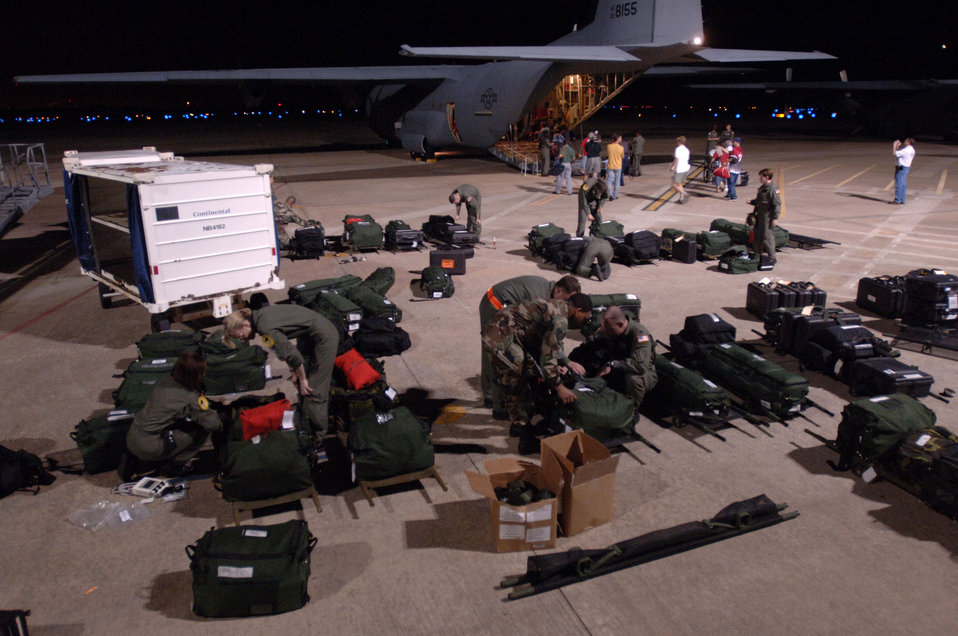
Airlifted to safety

BEAUMONT, Texas -- Critical Care Air Transport Teams inventory litter kits at a Mobile Aeromedical Staging Facility here Sept. 22 in preparation to evacuate patients ahead of the arrival of Hurricane Rita. Airmen from the 433rd Aeromedical Evacuation Squadron at Lackland Air Force Base, Texas, and the 183rd AES from the Mississippi Air National Guard were ensuring that each kit had ventilation, suction, IV, chemistry and intubations sets.